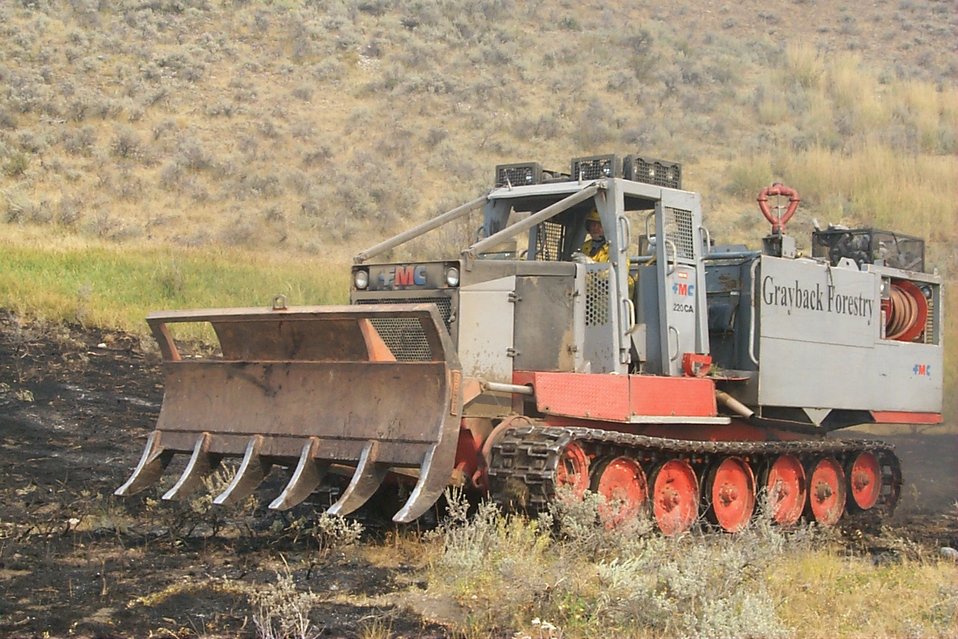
Dozer Fire Clearwater Fire Salmon Field Office USRD Upper Snake River District